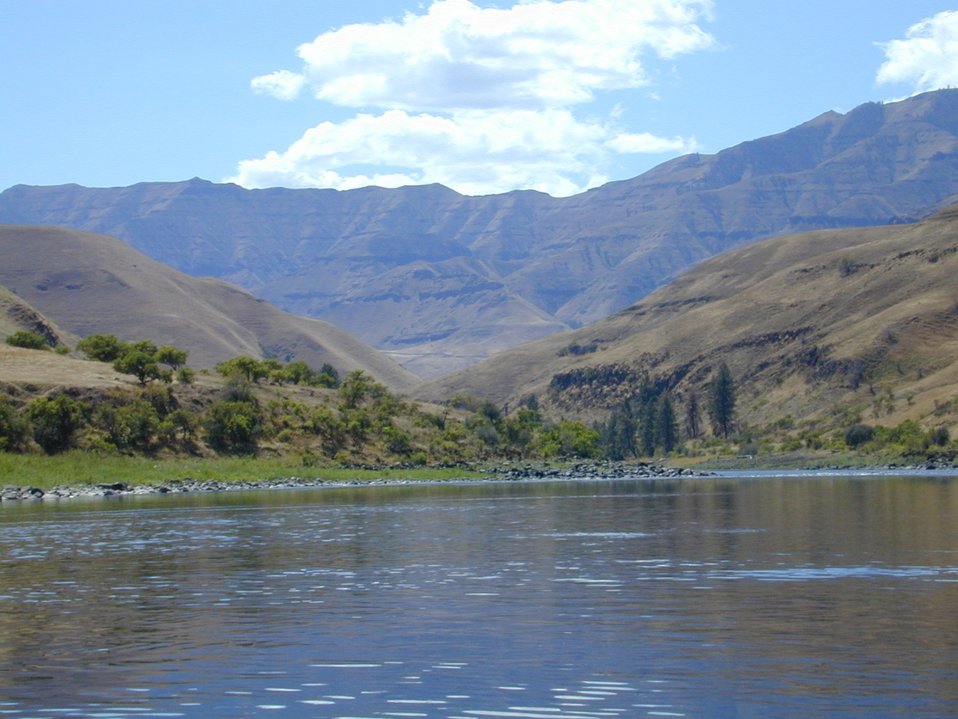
Scenic shot of Lower Salmon River Cottonwood Field Office UCSC Upper Columbia Salmon Clearwater District